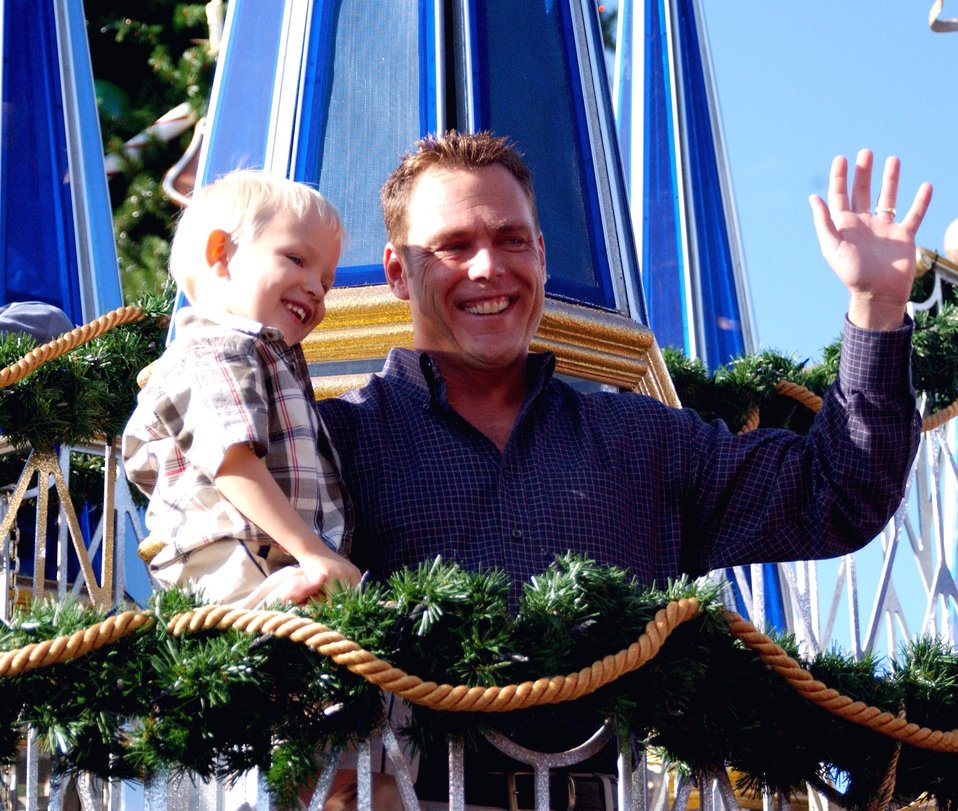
Military families ride in Disney Christmas parade

ORLANDO, Fla. -- Jim Craig and his son, Connor, wave to the crowd at Walt Disney World as they ride along on the military appreciation float. Mr. Craig's wife, Maj. Adriane Craig, is deployed from Patrick Air Force Base, Fla., to Southwest Asia supporting Operation Iraqi Freedom.